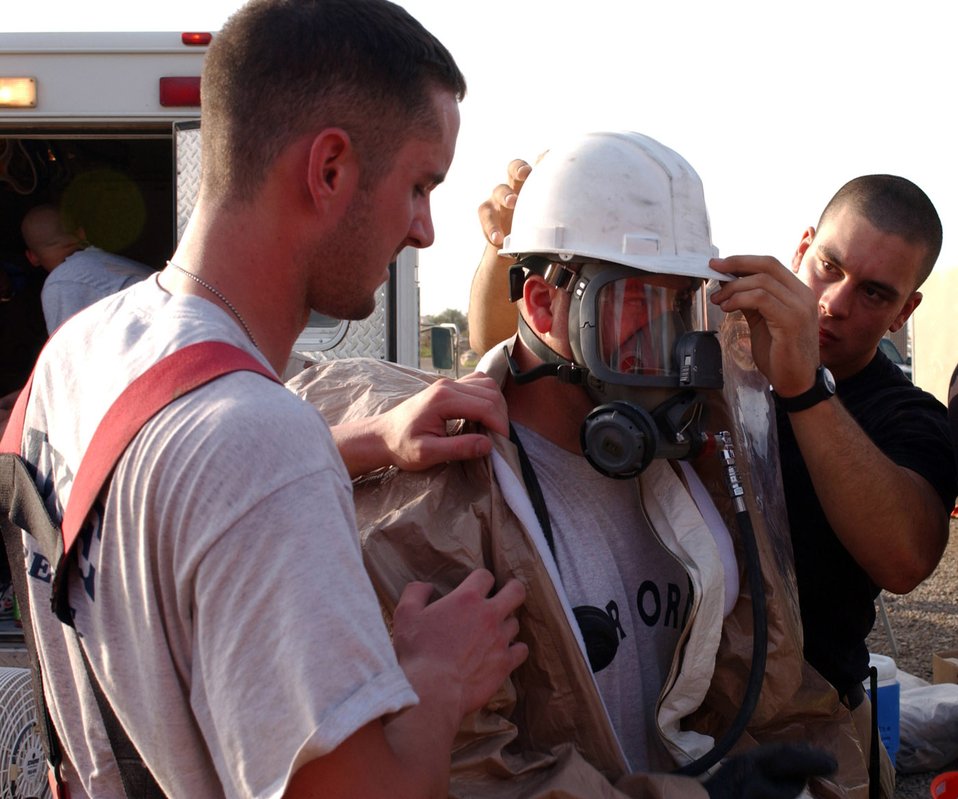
Deployed firefighters modern day dragon slayers

BAGHDAD, Iraq -- Airmen 1st Class Richard Ellis (left) and Matthew Metzger help Airman 1st Class Mitchel Kukykendal suit up in preparation to enter an exercise evaluation area here. The Airmen are hazardous material response team members with the 447th Expeditionary Civil Engineer Squadron. Airman Ellis is deployed from Luke Air Force Base, Ariz., Airman Metzger is deployed from Kadena Air Base, Japan, and Airman Kukykendal is deployed from Lajes Field, Azores.